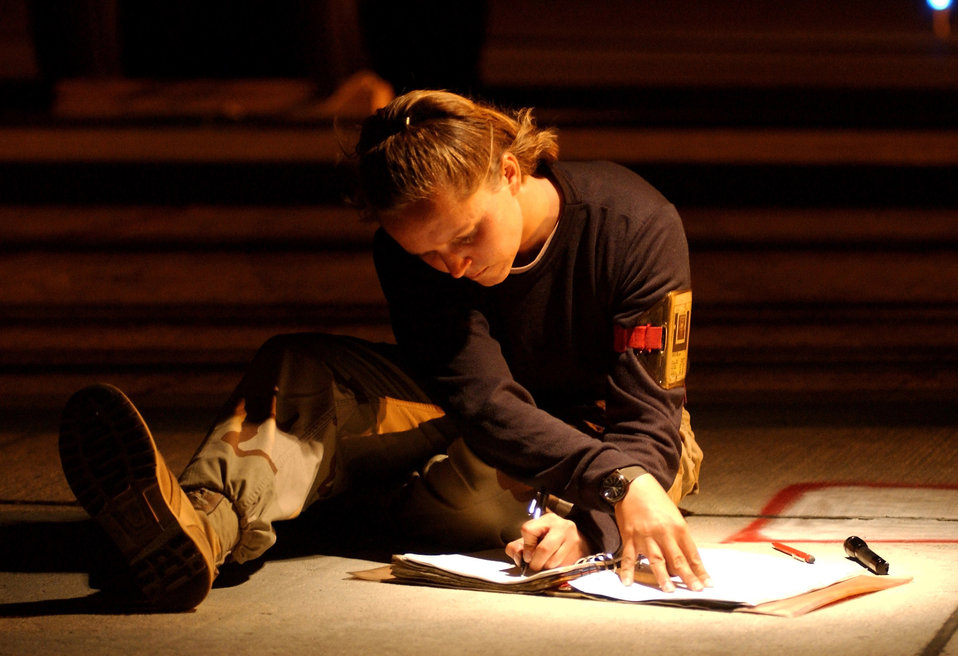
Work log

OPERATION ENDURING FREEDOM -- An Air Force B-1B Lancer crew chief from the 405th Air Expeditionary Wing documents work in a maintenance log at an Operation Enduring Freedom location. Air Force B-2A Spirit, B-1B, B-52H Stratofortress, F-15E Strike Eagle, F-16 Fighting Falcon and AC-130U gunship aircraft have dropped more than 6,100 tons of munitions, more than 72 percent of the OEF total.